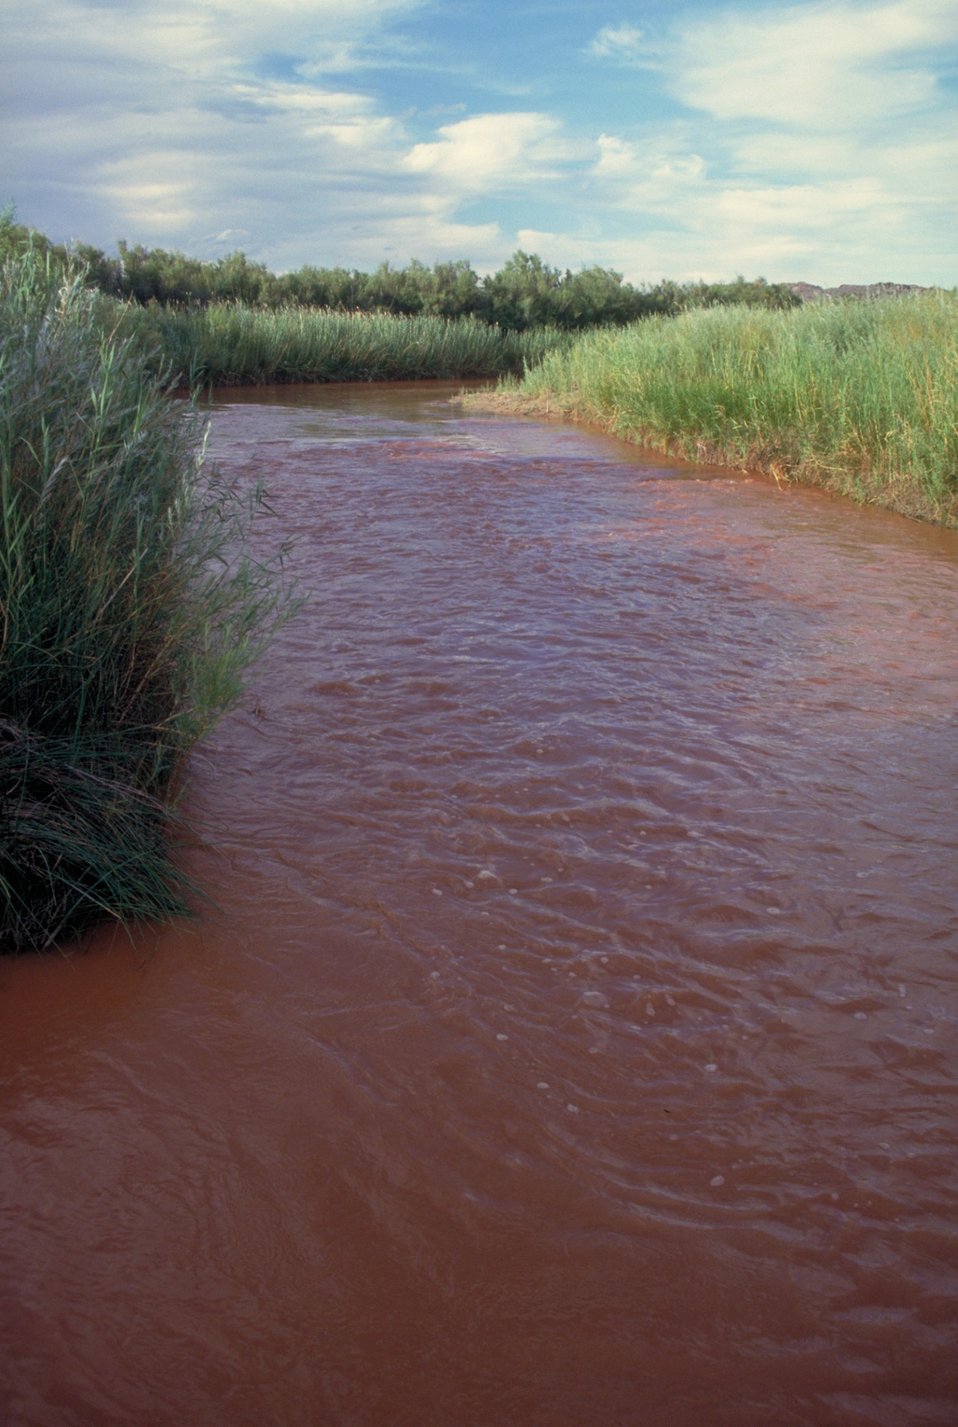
San Rafael Swell River near Green River, Utah.